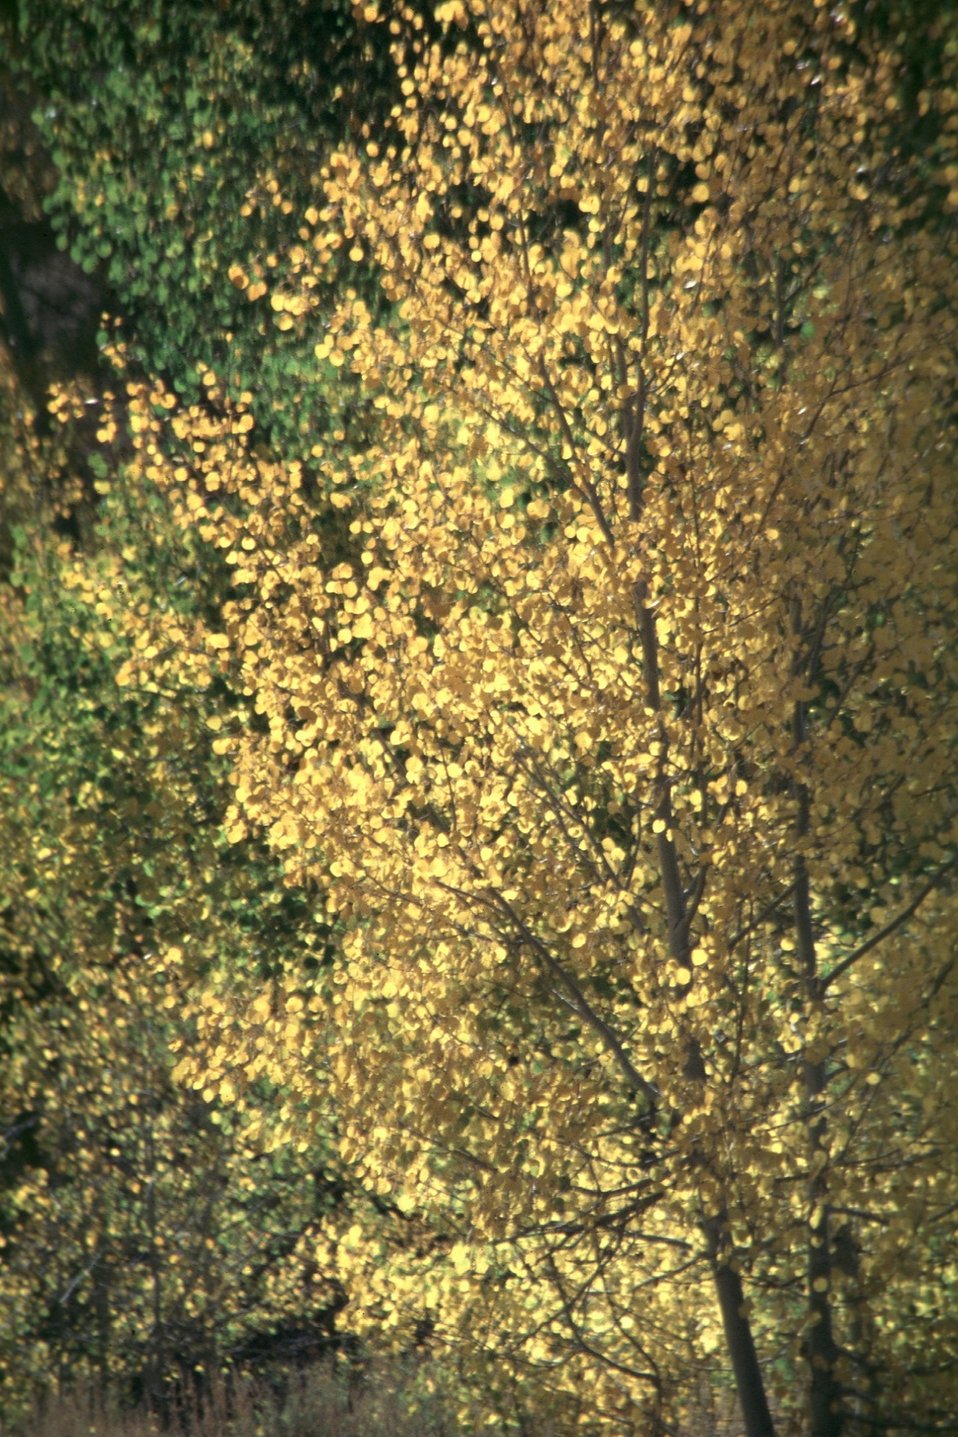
Aspens at Fish Creek, Steen's Mountain.